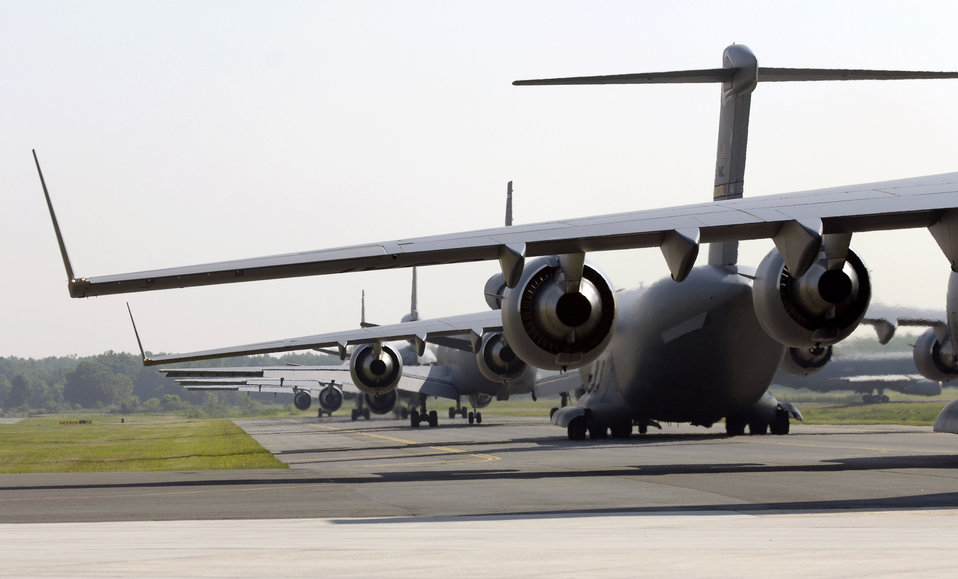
Elephant Walk

KC-10 Extenders and C-17 Globemaster IIIs from McGuire Air Force Base, N.J., taxi down the flightline during the emergency response exercise Elephant Walk. This is the first time C-17s and KC-10s have been paired in an exercise. Sixteen aircraft launched from McGuire on Friday, June 30, as part of the exercise.